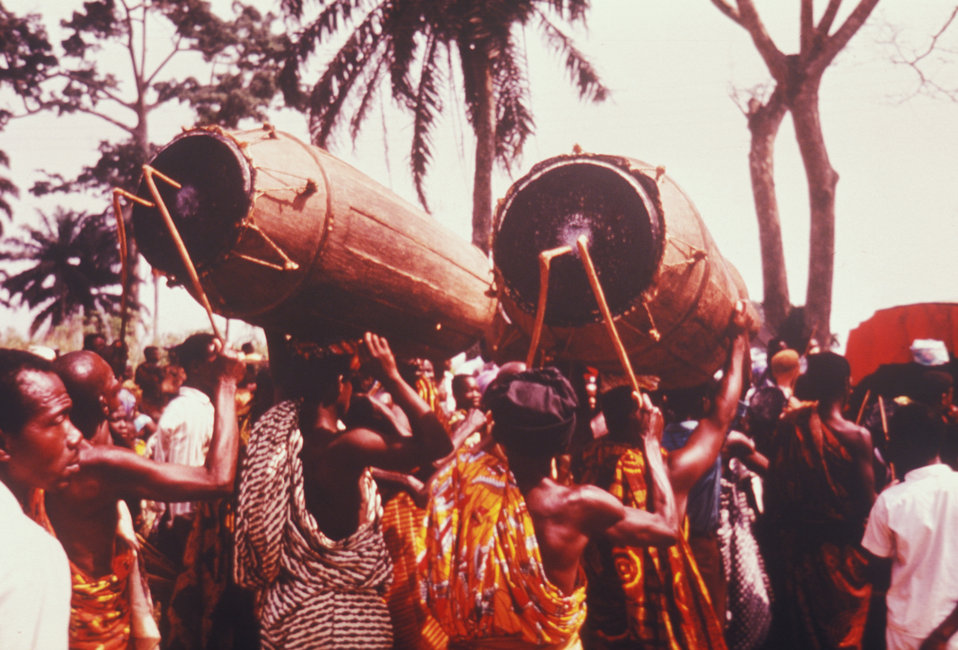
These drummers are following their chief during a smallpox eradication ceremony in West Africa.